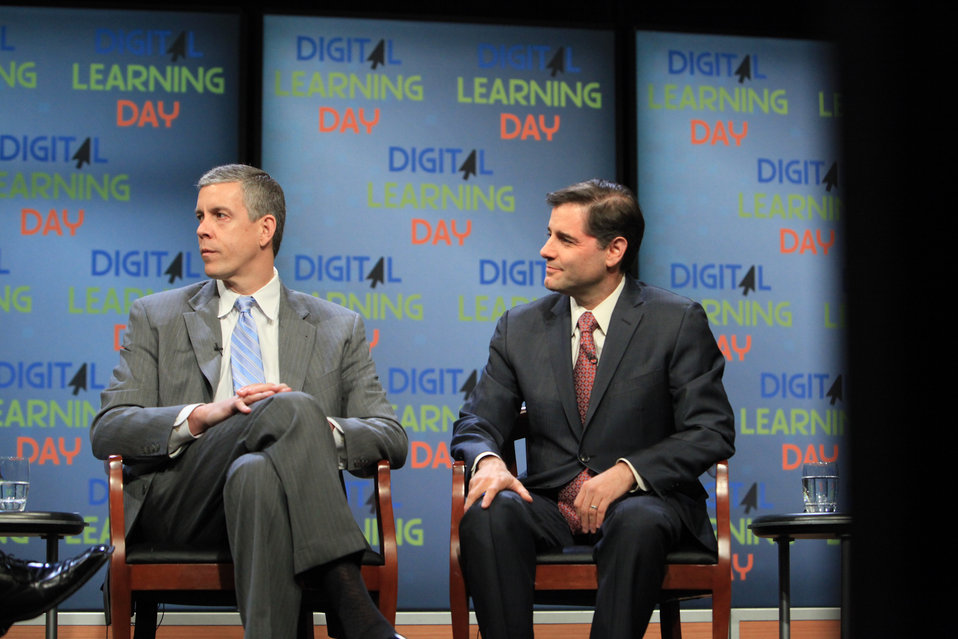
FCC Chairman Genachowski at the Digital Learning Day Town Hall

FCC Chairman Genachowski with the U.S. Department of Education Secretary Arne Duncan in studio in Washington, DC, on February 1, 2012.